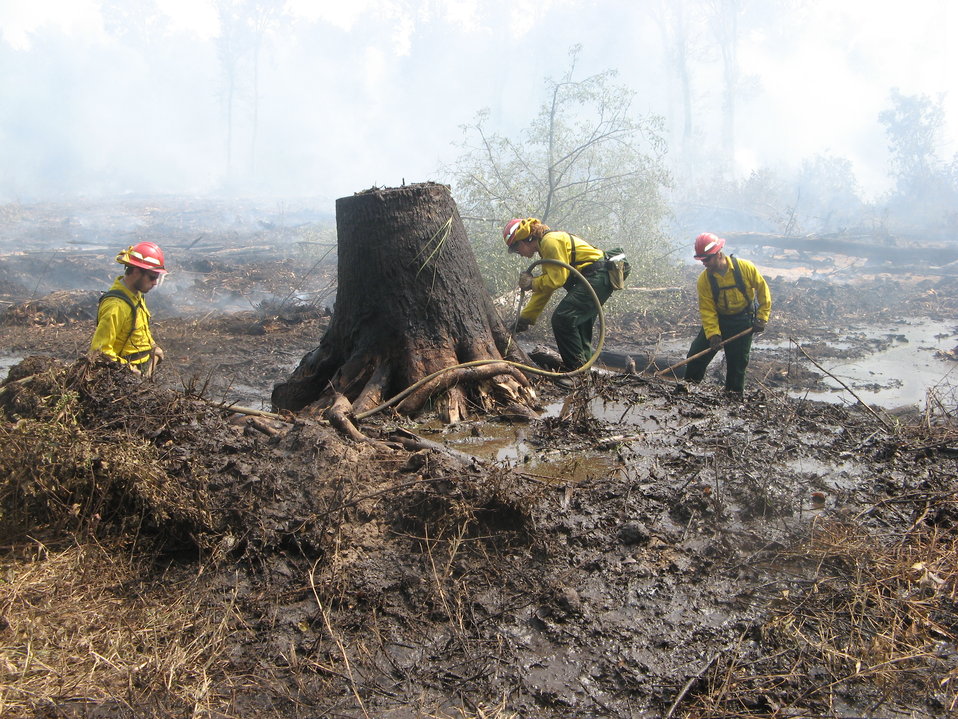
AmeriCorps NCCC Phoenix 3 mops up

Suffolk, VA, August 2011: Members of the Phoenix 3 AmeriCorps National Civilian Community Corps cool down a huge stump off of Interior Ditch at the Lateral West Fire on Great Dismal Swamp Naitonal Wildlife Refuge.